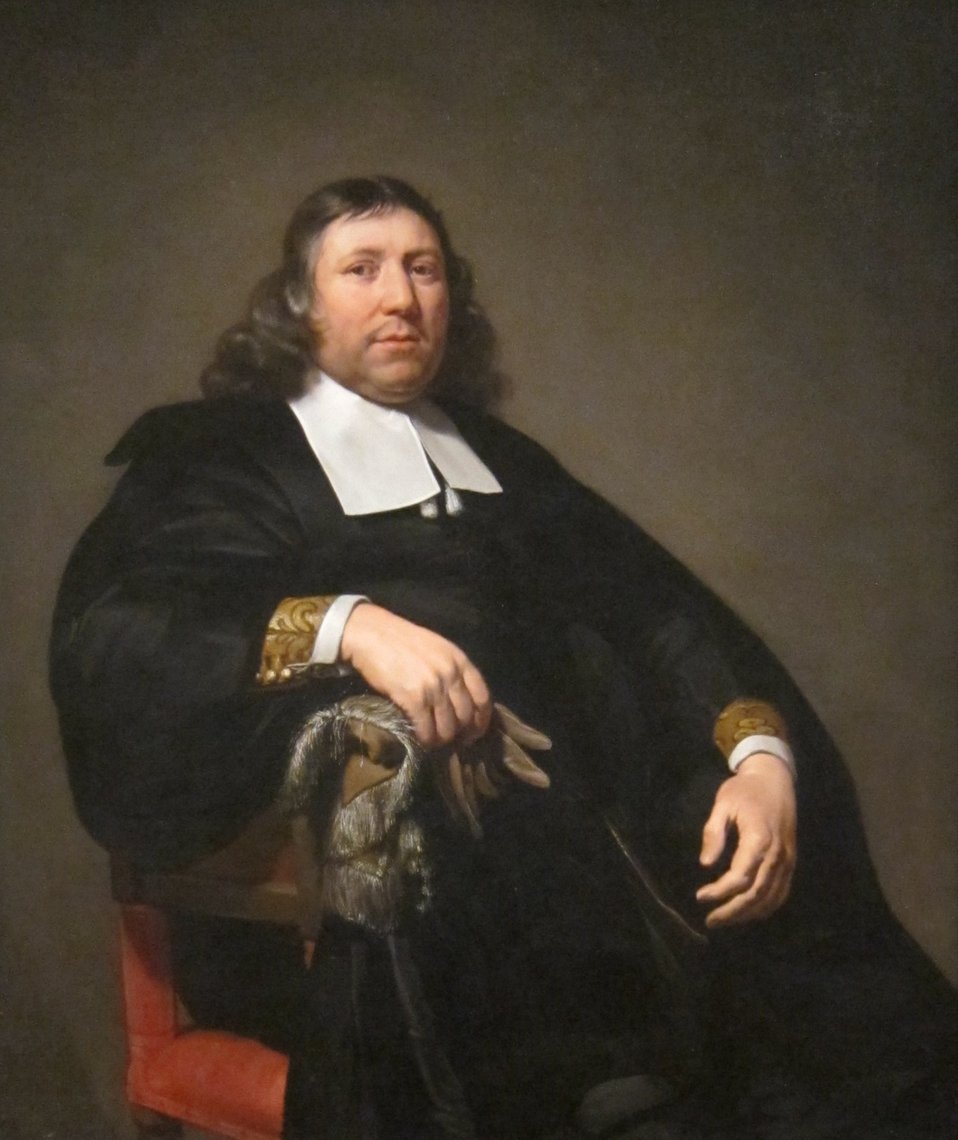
Portrait of Dammas Guldewagen, oil on canvas painting by Jan de Bray, c. 1657, Dayton Art Institute